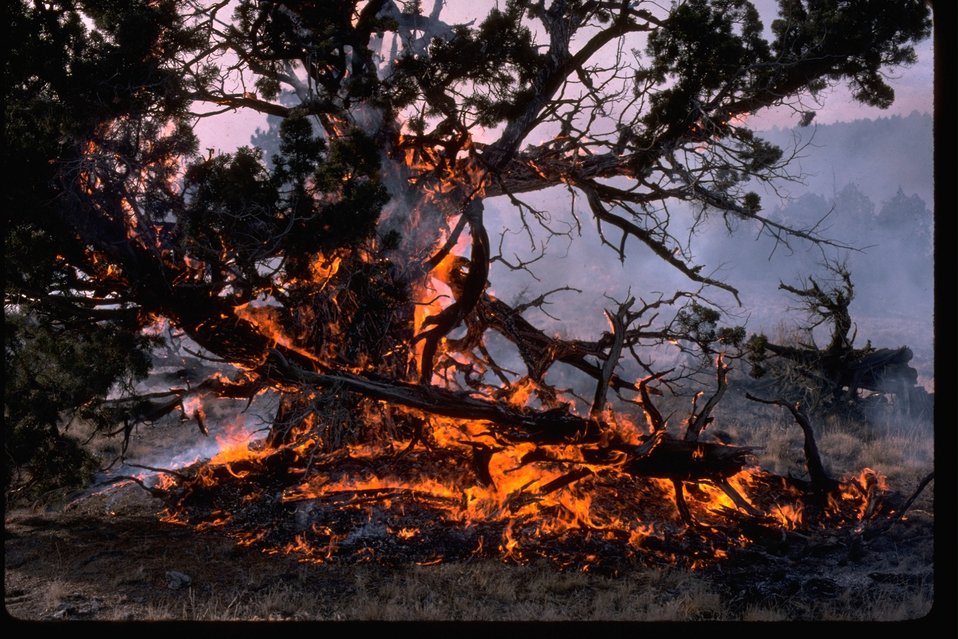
Burning Juniper at Sage Hollow.